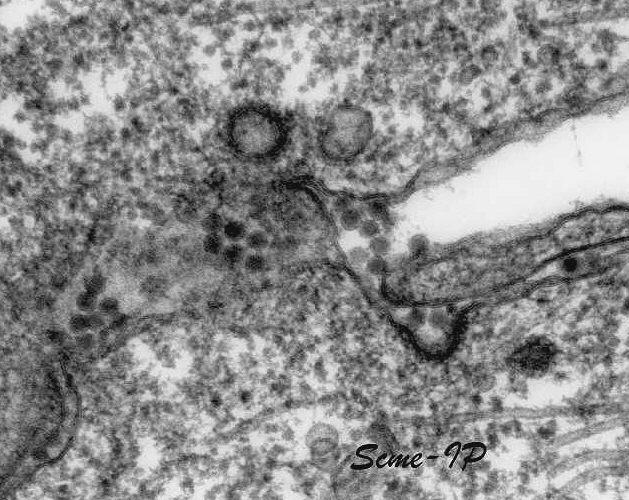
Transmission electron micrograph of West Nile virus.